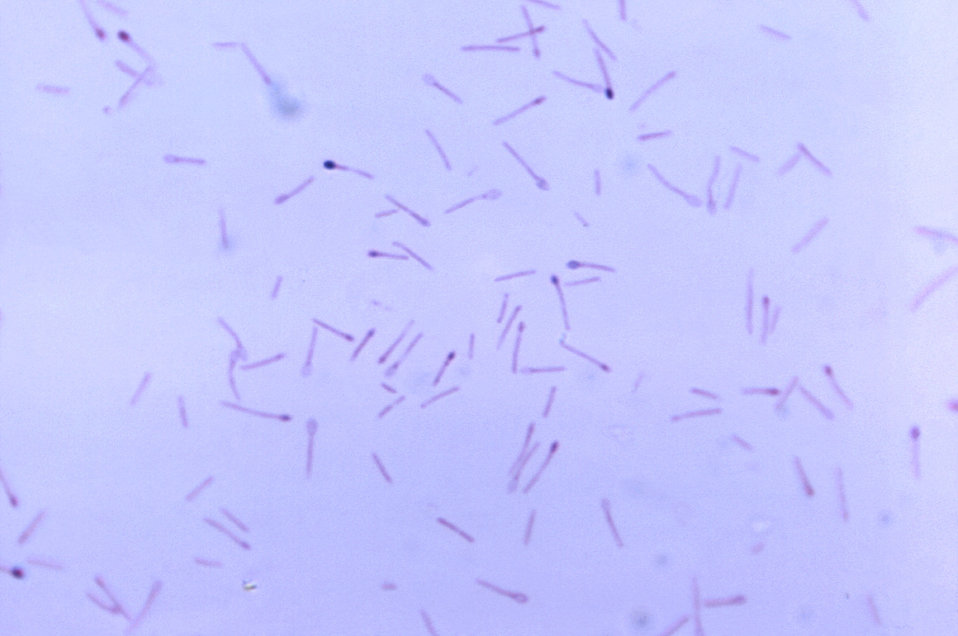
Magnified 956X, this Gram-stained photomicrograph depicted numbers of the Gram-positive Clostridium cadaveris, formerly known as Clostridium capitovale bacteria, which had been cultivated on a blood agar plate (BAP) over a time period of 48 hours. C. cadaveris is a nontoxin-producing organism, and is normally, non-pathogenic to humans.